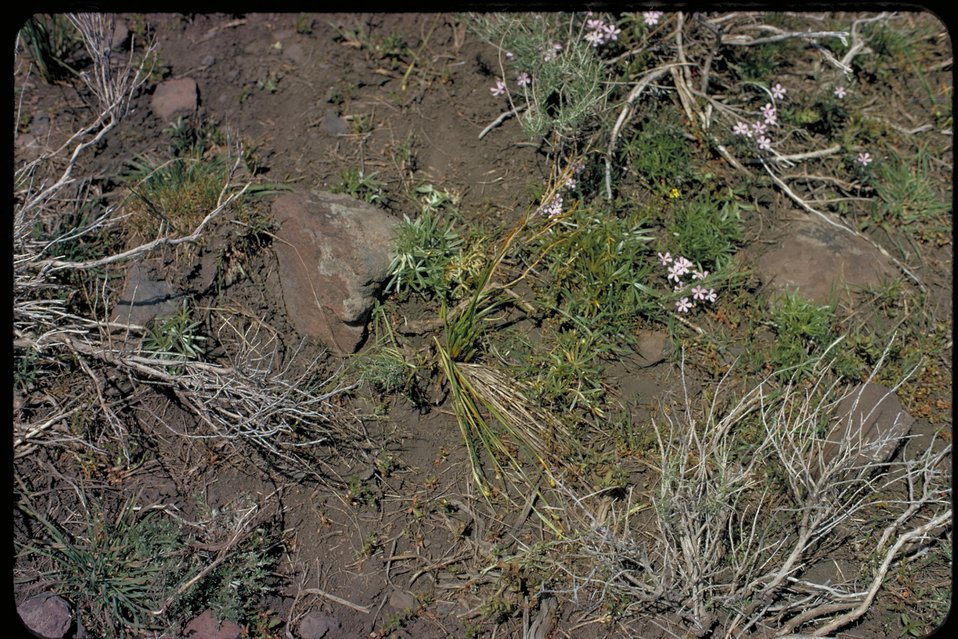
Sheet Erosion Boise Front Four Rivers Field Office LSRD Lower Snake River District